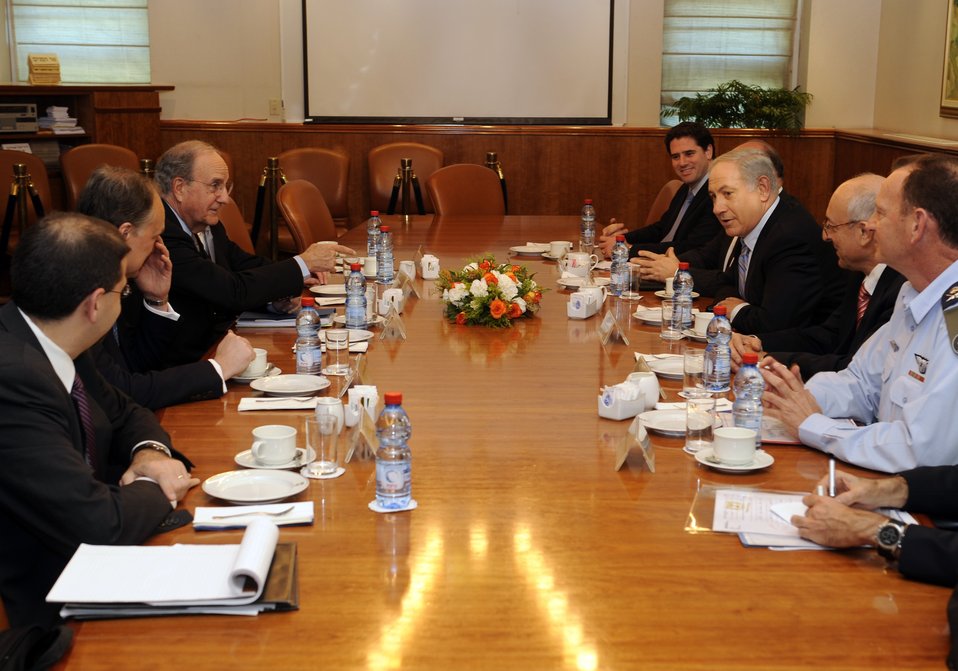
Special Envoy Mitchell Meets With Israeli Prime Minister Netanyahu

Special Envoy for Middle East Peace George Mitchell meets with Israeli Prime Minister Binyamin Netanyahu at the Prime Minister’s office, Jerusalem, May 5, 2010.